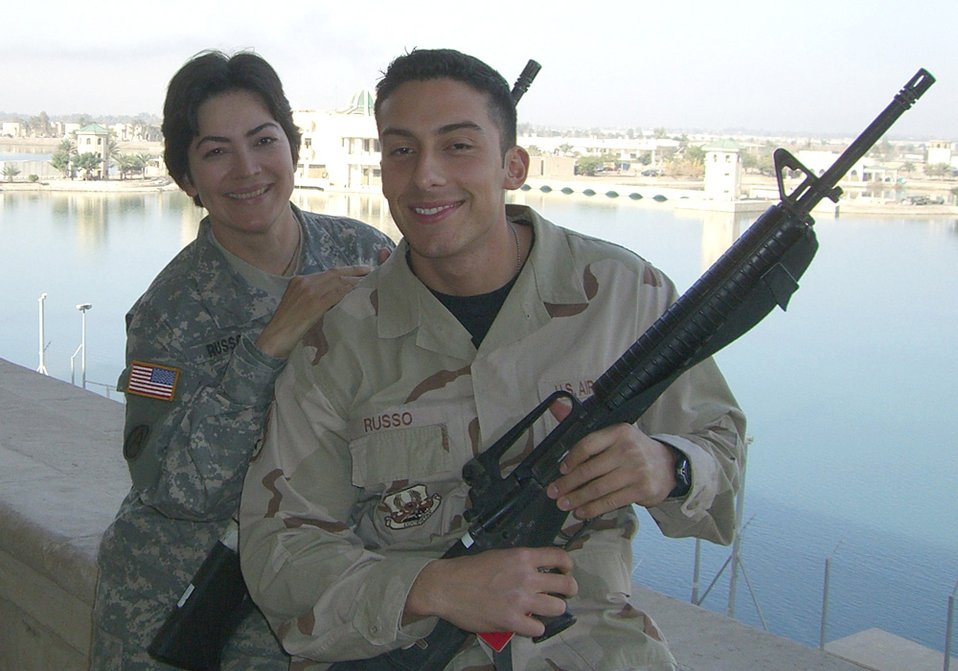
Spending Christmas together

BAGHDAD INTERNATIONAL AIRPORT, Iraq (AFPN) -- Staff Sgt. Salvador Russo spent Christmas here with his mother, Sgt. 1st Class Ana Russo, who is deployed to Tallil, Iraq. Sergeant Russo is in the 447th Expeditionary Communications Squadron and his mother Sergeant Russo is in the Headquarters Detachment, 485th Combat Support Battalion.